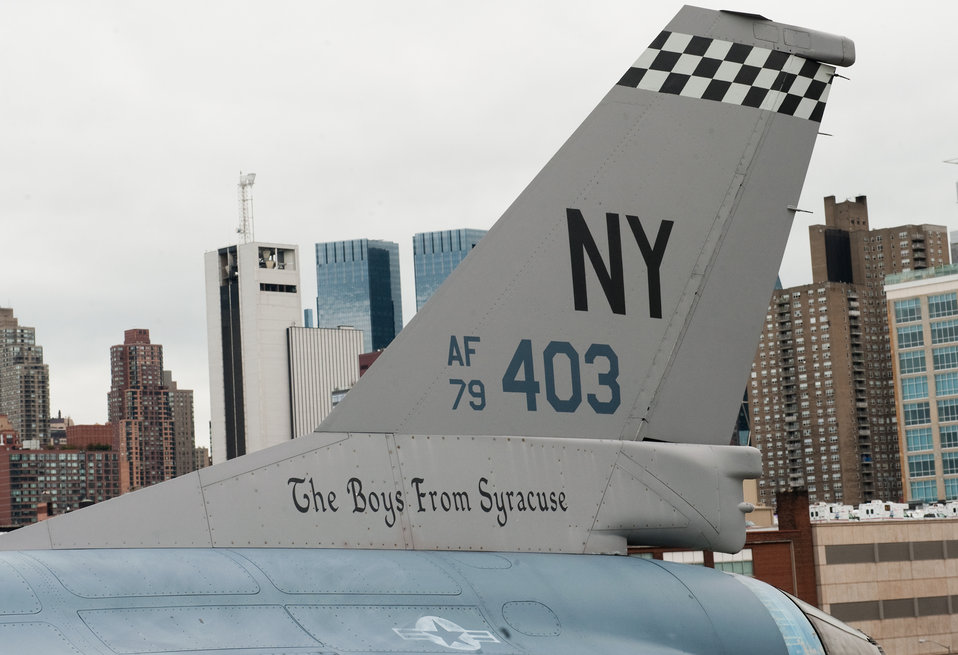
Air Force Week New York City Proclamation Ceremony

During the Air Force Week New York City proclamation ceremony at the USS Intrepid on Aug. 24, 2010. The event at the Intrepid Sea, Air & Space Museum was highlighted by a six-ship flyover by the USAF Thunderbirds. The Honorable Michael Donley, Secretary of the Air Force attended, along with General Raymond Johns, Commander of Air Mobility Command. The Police Commissioner of the City of New York, the Honorable Raymond Kelly, represented NYC. Mr. Greg Kelly of